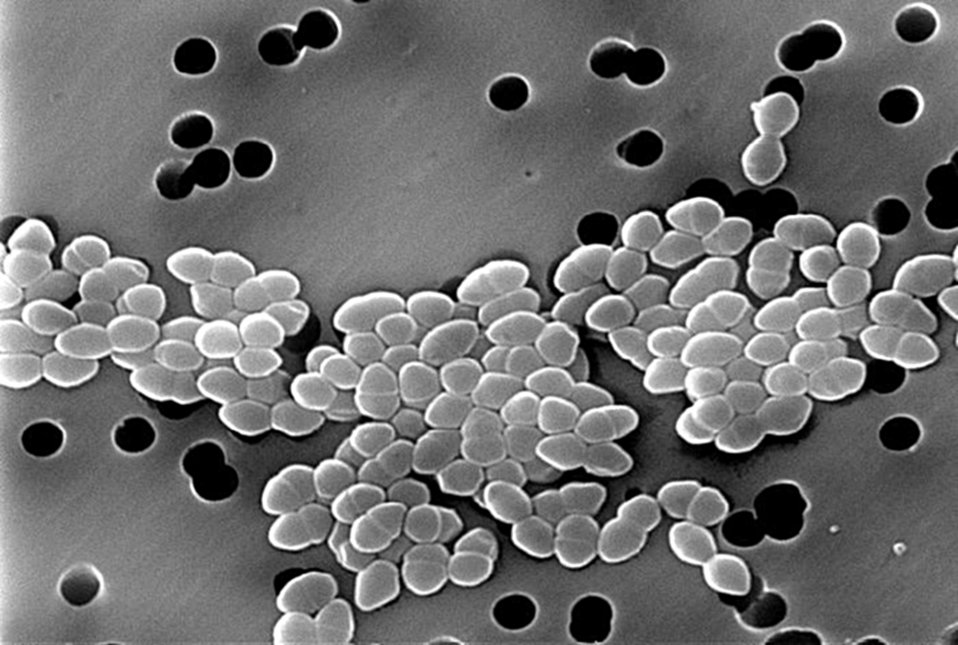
Scanning electron micrograph (SEM) of Vancomycin Resistant Gram-positive Enterococci sp. bacteria.